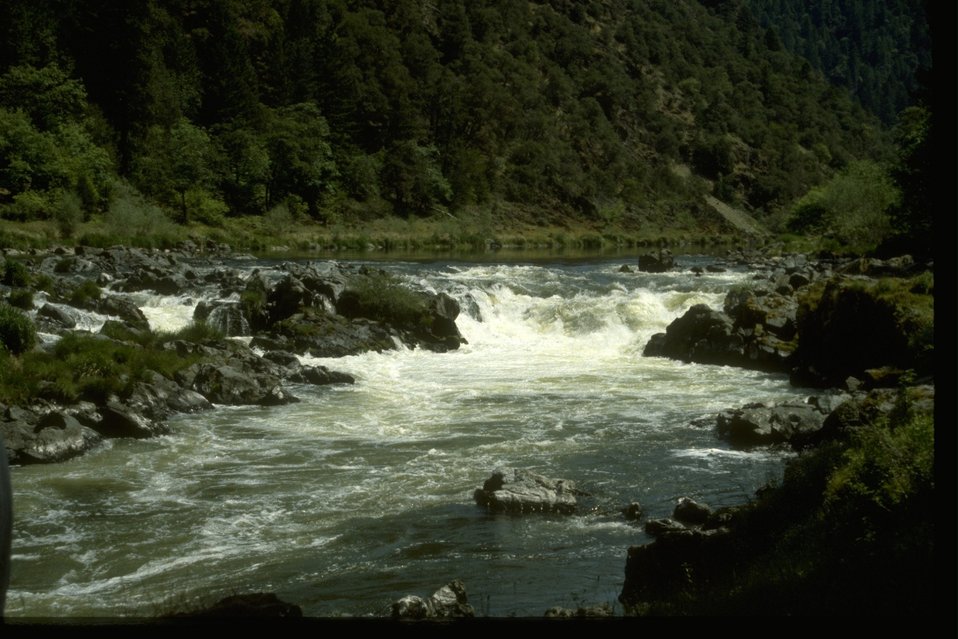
Rainie Falls on the Rainie River.